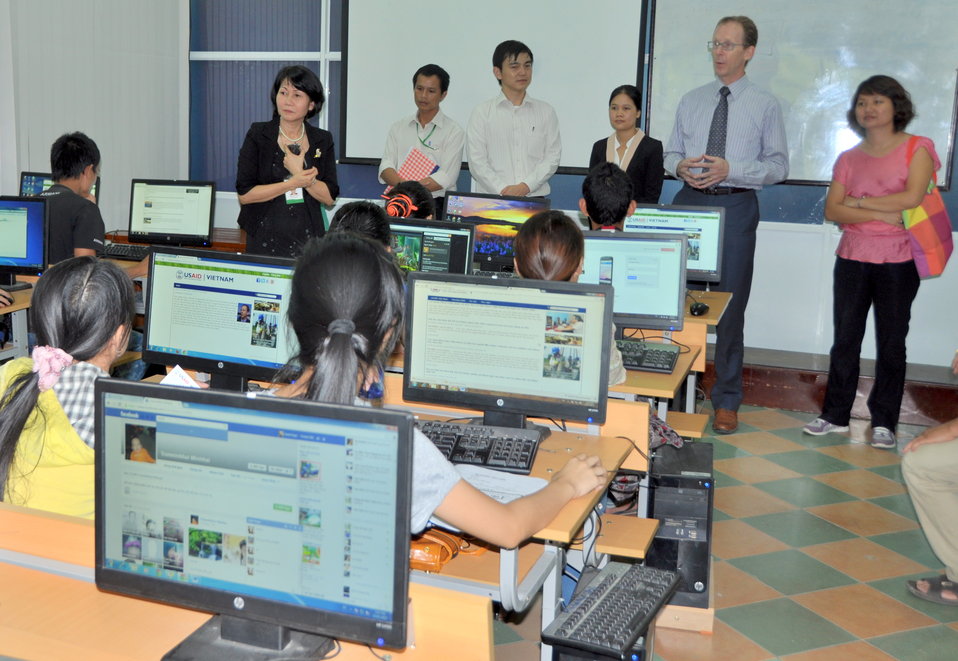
USAID Visits IT Training Program for People with Disabilities at Dong A University

Danang, Vietnam
July 17, 2013